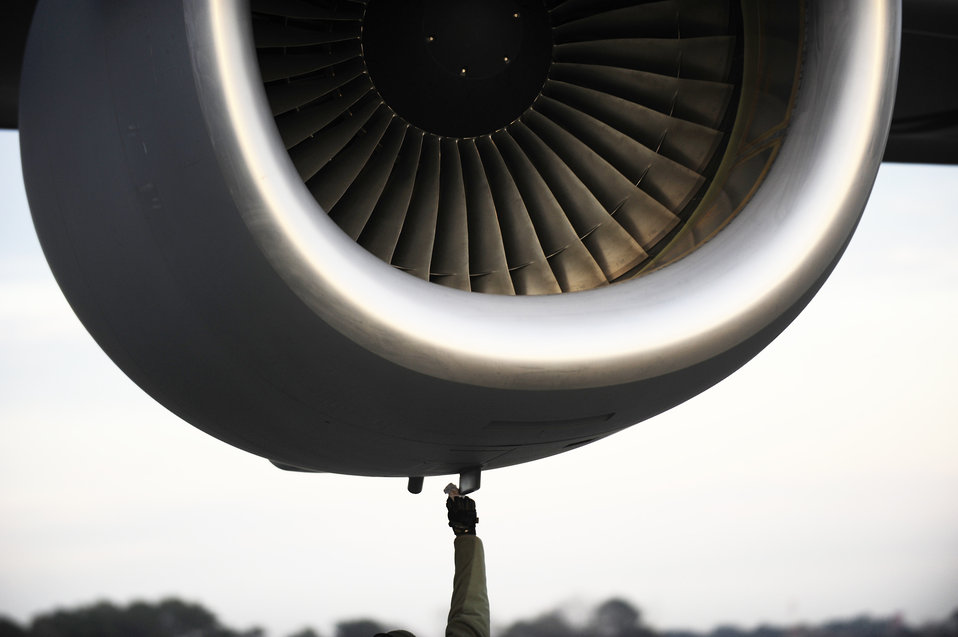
Haiti Relief Operations

Staff Sgt. Matthew Cain wipes liquid off of a C-17 Globemaster III Jan. 14, 2010, at Charleston Air Force Base, S.C., prior to it's participation in a relief effort to Haiti in the aftermath of a devastating earthquake. Sergeant Cain is assigned to the 315th Air Maintenance Squadron.